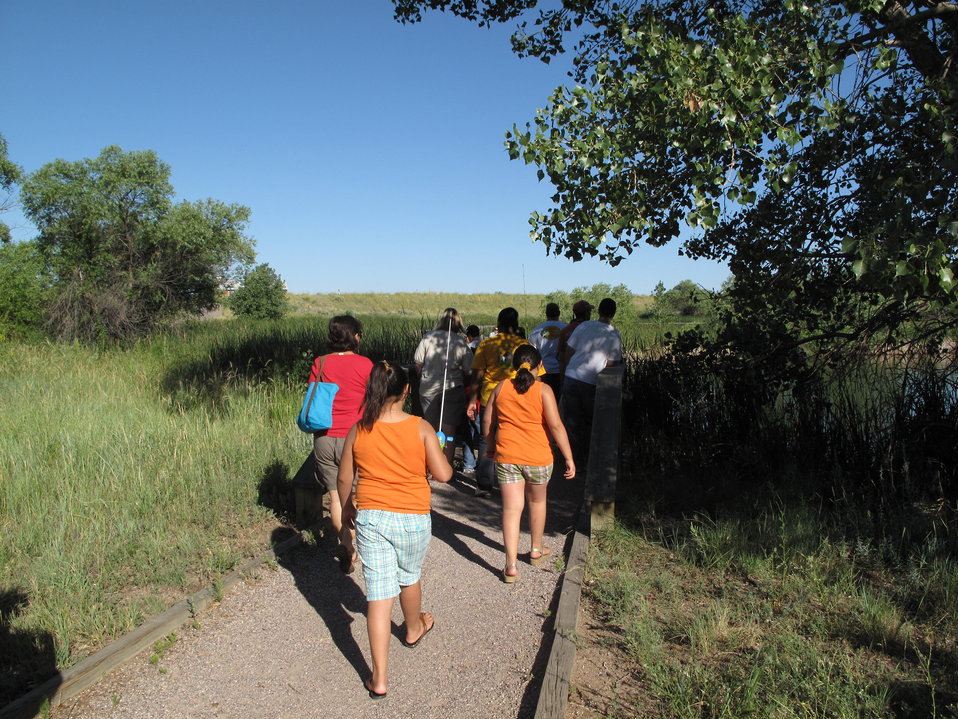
ELK fishing trip to RM Arsenal

On our way to the lake!